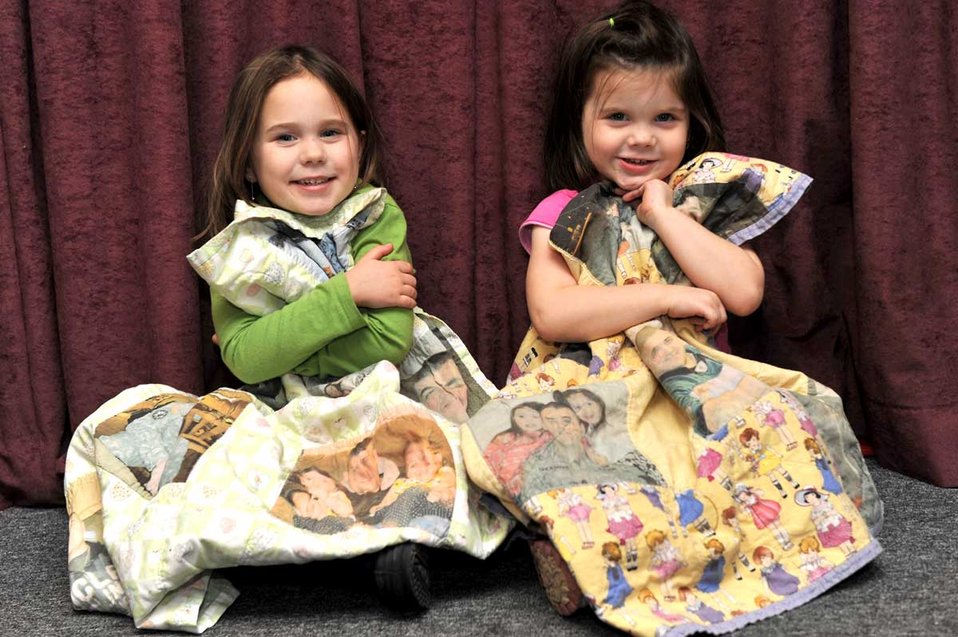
‘Kid Comfort’ brings quilts to children of the deployed

Laela and Kaelie Shoemaker hug their daddy blankets at the Armed Services YMCA on Joint Base Elemendorf-Richardson, Nov. 4. The girls each received a blanket through the Operation Kid Comfort program because their father is deployed.